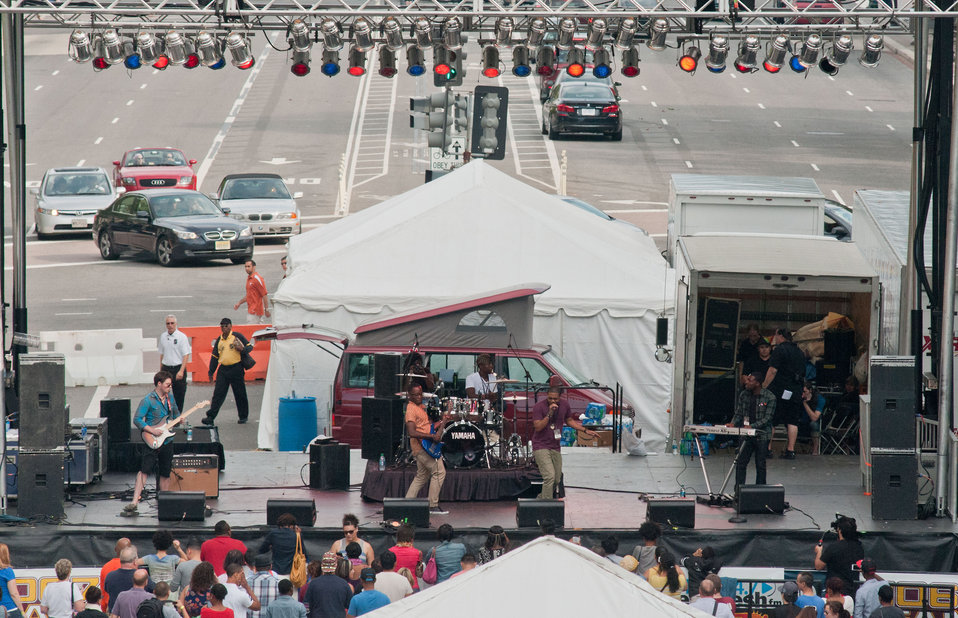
The Taste of D.C., event highlights more than 70 eateries, 30 specialty beer providers, the United Service Organization (USO) Metropolitan Washington, and live bands. It is anticipated that more than 500,000 people will attend over the course of the three-day event, which extends from the White House to the Capitol, along Pennsylvania Ave. in Washington D.C. on Saturday, October 6, 2012. Agriculture Food Safety and Inspection Service specialists present talks and cooking demonstrations. Agriculture’s mobile Discovery Zone is on hand to educate children and parents about the four main principals of food safety – clean, separate, cook and chill.